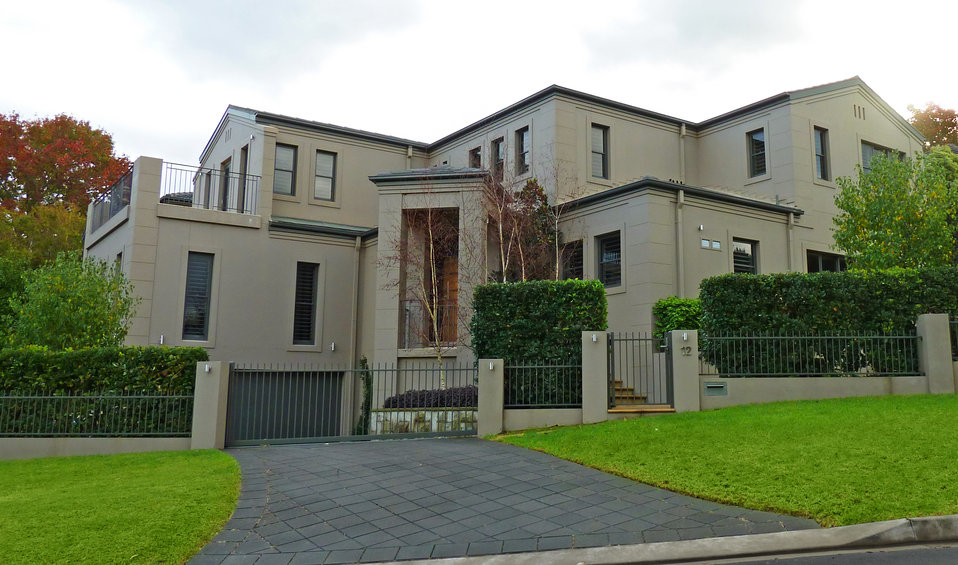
12 Valley Road, Lindfield, New South Wales, Australia.